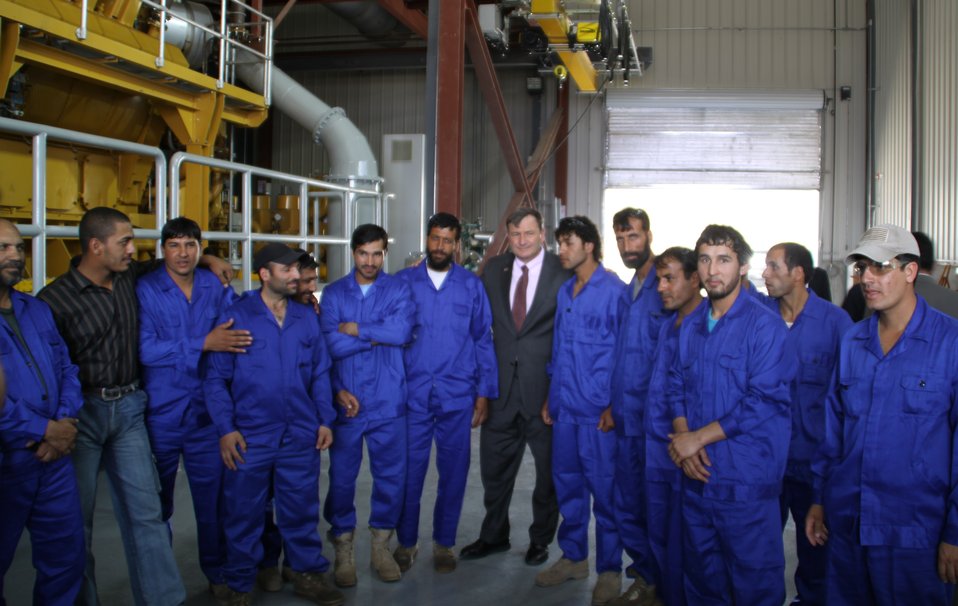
105 MW Tarakhil Power Plant Handover